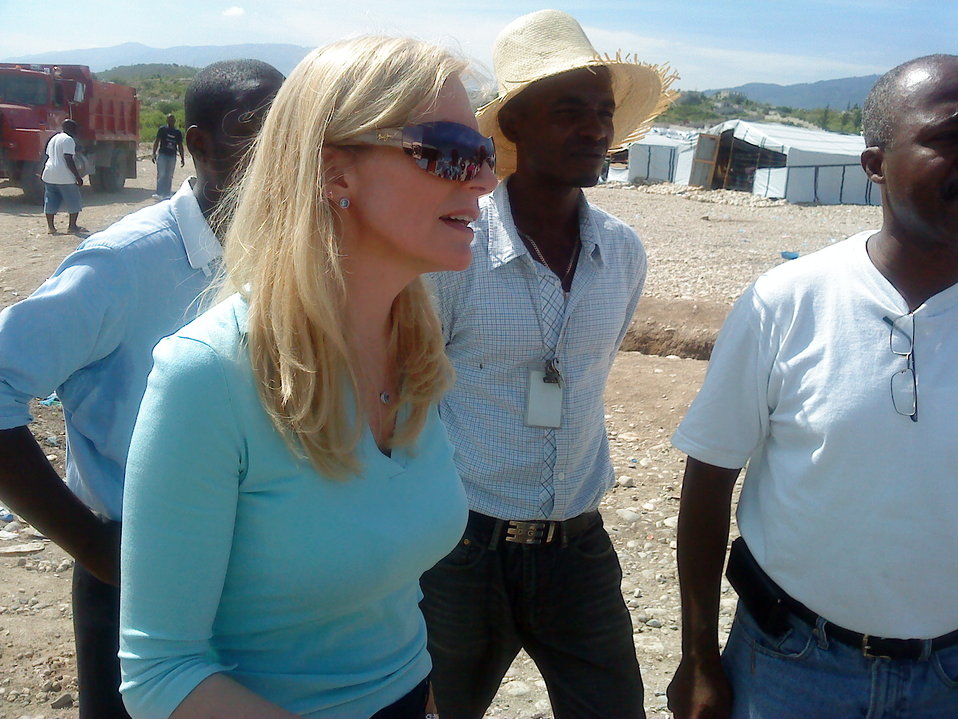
Under Secretary Lael Brainard visits Haiti, 7/29/2010

Under Secretary Lael Brainard visited Haiti on July 29 to meet with senior government officials, assess first-hand the assistance efforts of the Multilateral Development Banks (MDBs), and discuss Treasury’s forthcoming deployment of a technical assistance team to the country.